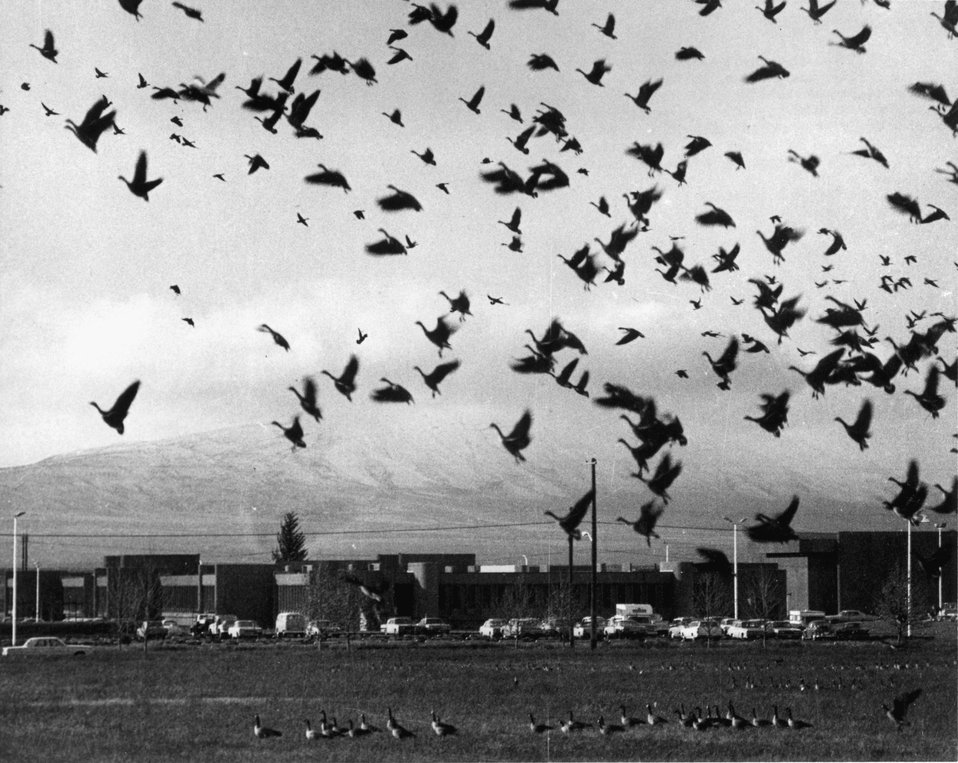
Geese. c. 1972